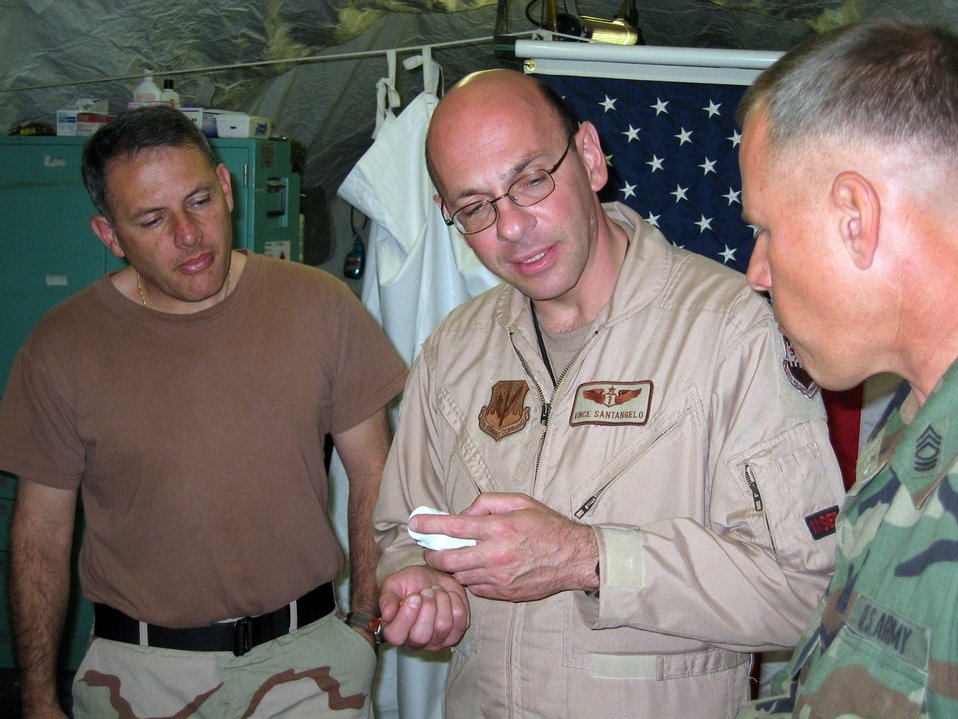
Medics support humanitarian effort

ISLAMABAD, Pakistan (AFPN) -- Master Sgt. Luis Valladares (left) and Lt. Col. (Dr.) Vince Santangelo (center) discuss medication options with a Soldier supporting Pakistani humanitarian relief operations. Sergeant Valladares is an independent duty medical technician and Colonel Santangelo is an air transportable clinic commander.